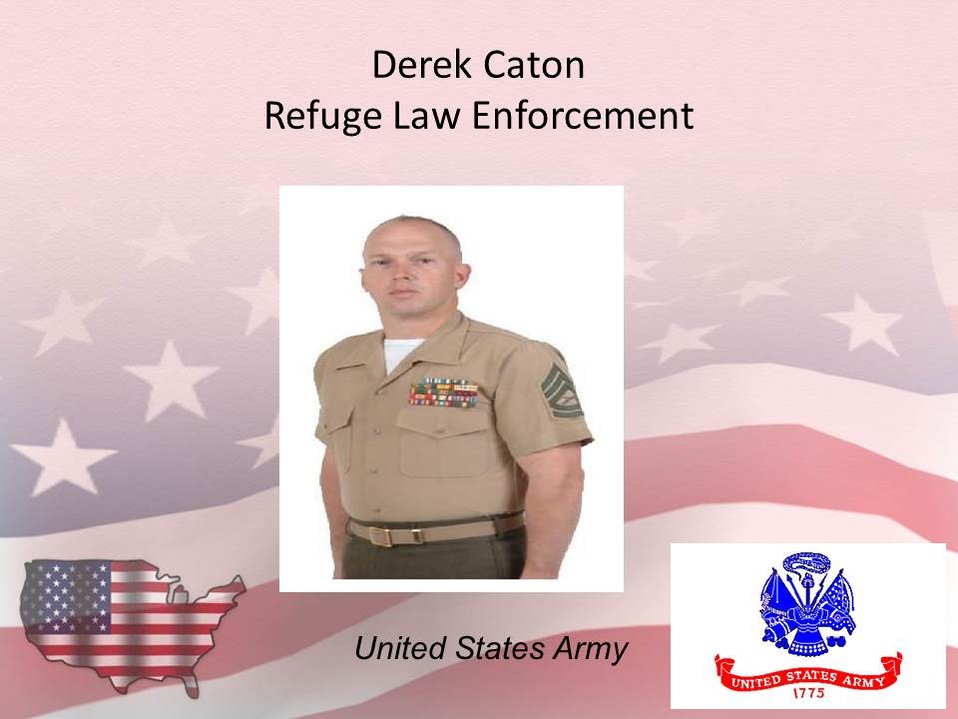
Derek Caton